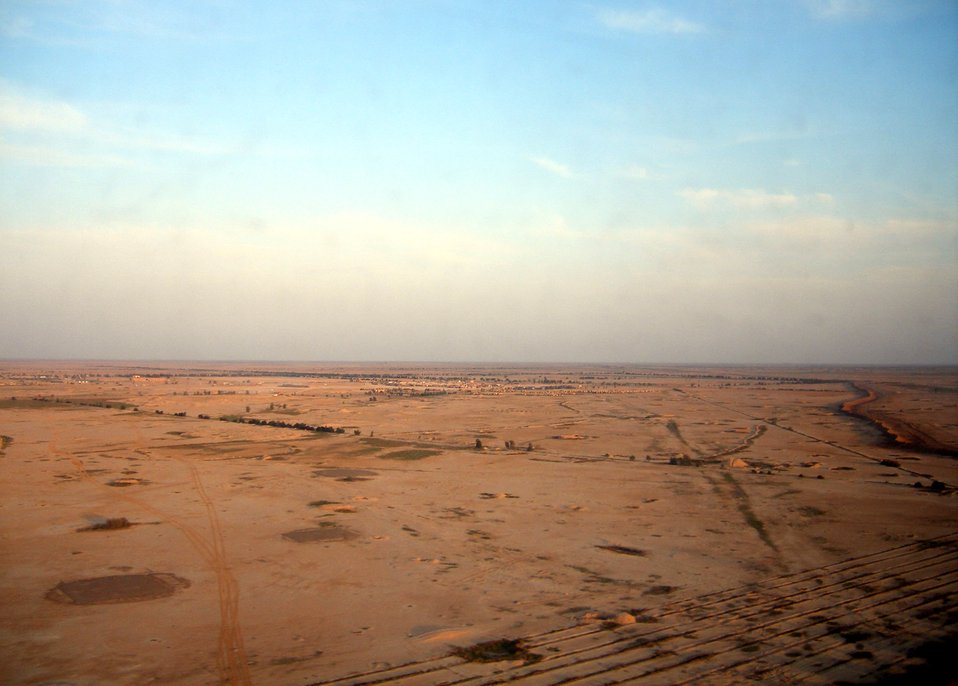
RED HORSE: Mobilized civil engineering at its finest

Pictured is an aerial view of Forward Operating Base Shawshook, in Iraq. It is the new home of the 3rd Brigade Combat Team of the 3rd Infantry Division from Fort Stewart, Ga. Facilities were constructed in little more than month by the 557th Expeditionary RED HORSE Squadron, the 411th Engineering Brigade and Kellogg, Brown and Root to house the brigade combat team as part of the Baghdad Security Plan.